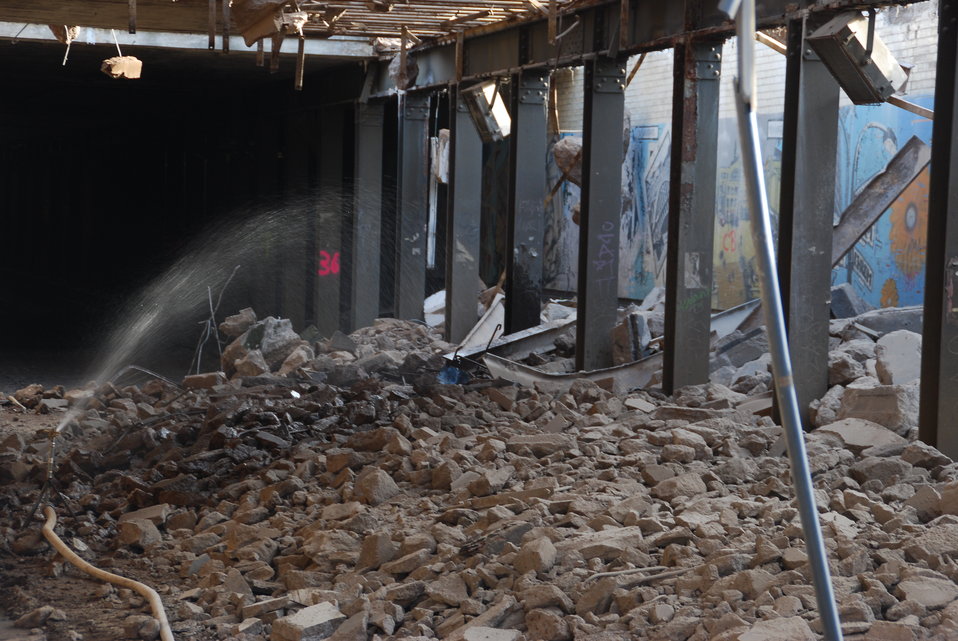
Abriss Bahnhofstunnel Frankfurt (Oder)